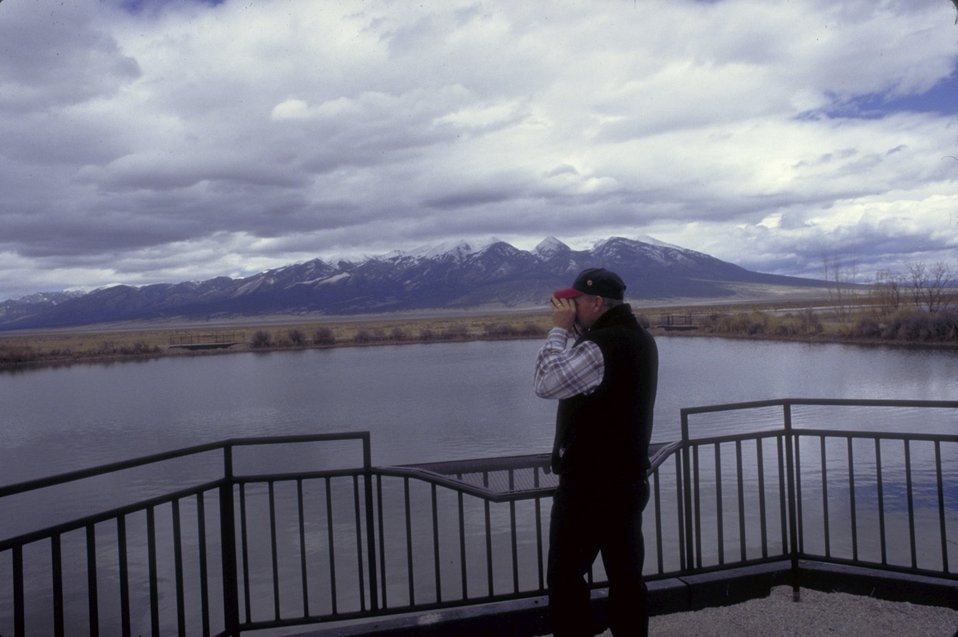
Bird watching at Blanca Wetlands.